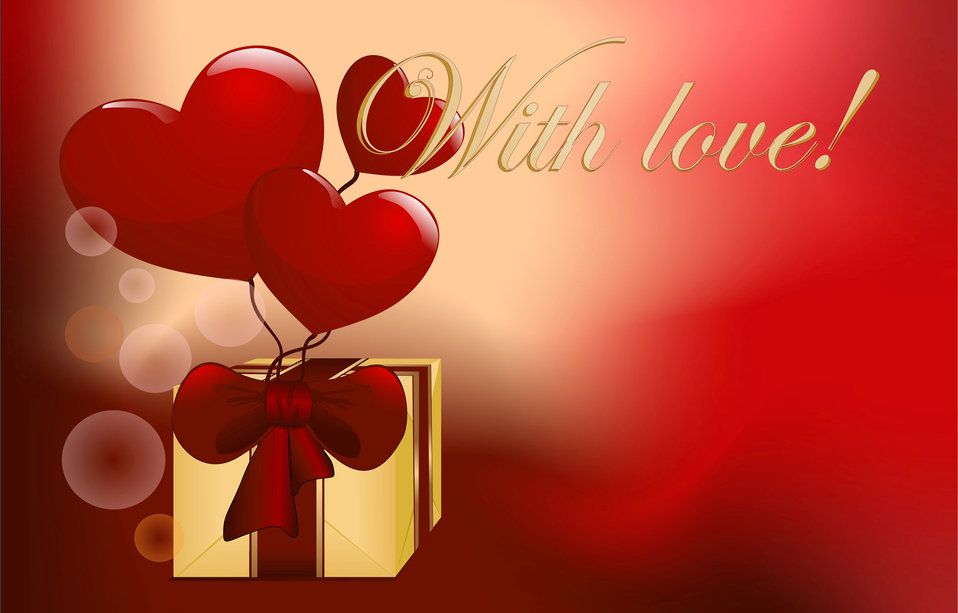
With love!

Ready background for cards with the hearts and gift.